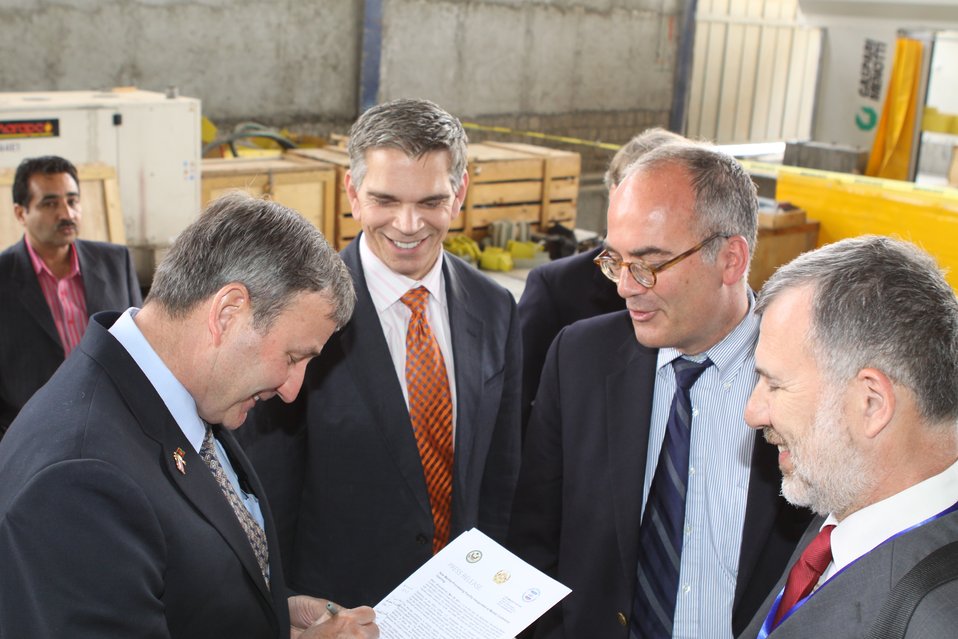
100525 Hirat Marble Conference 302